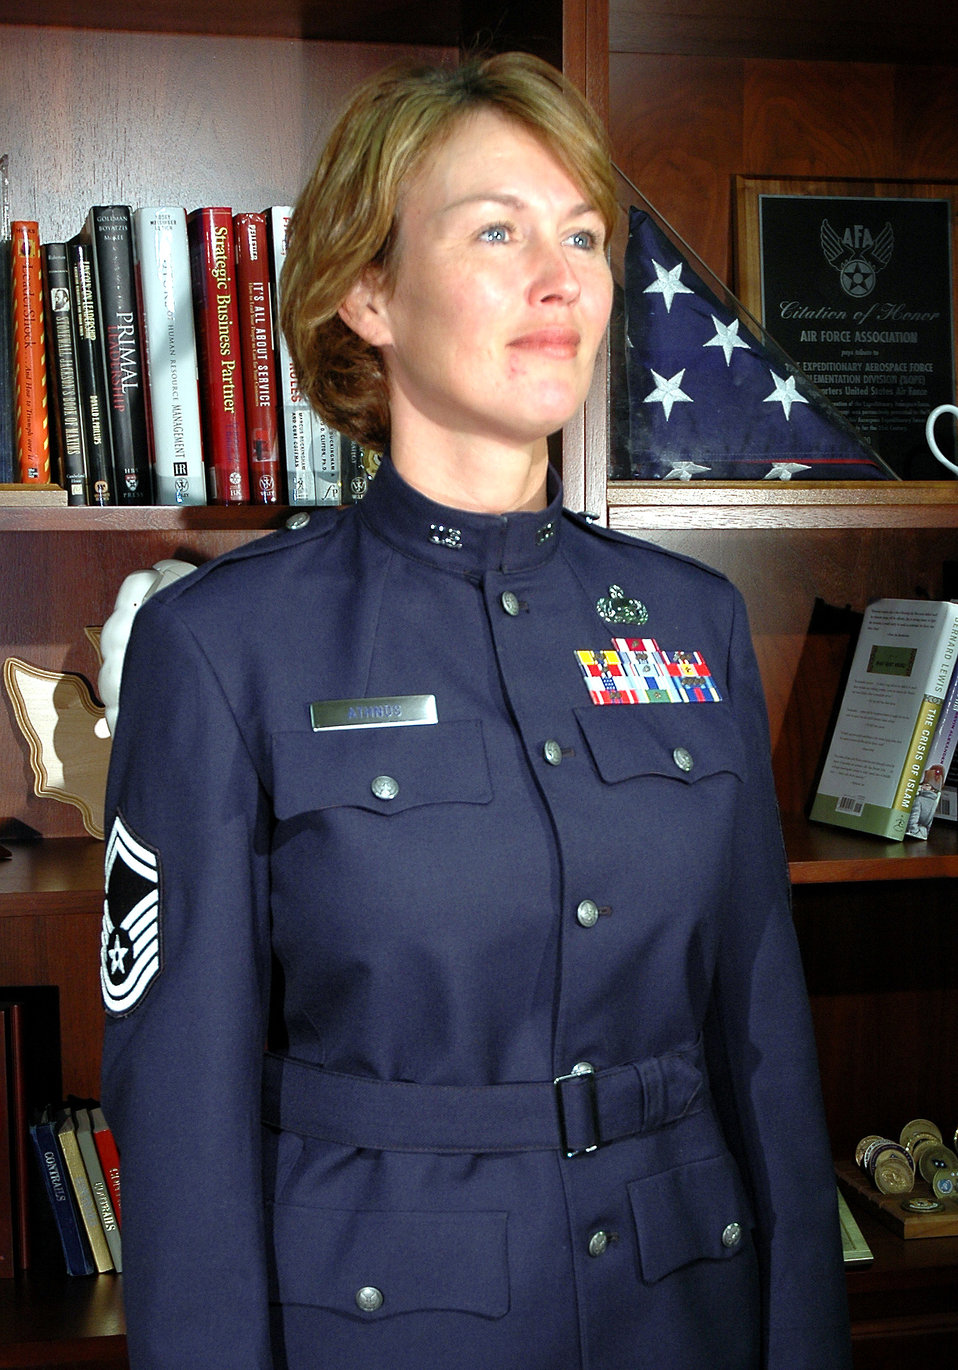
New service dress prototypes peak interest

Senior Master Sgt. Dana Athnos shows off a prototype of the Billy Mitchell heritage coat in the Pentagon on Monday, May 15, 2006. Sergeant Athnos is a member of the Air Force uniform board.